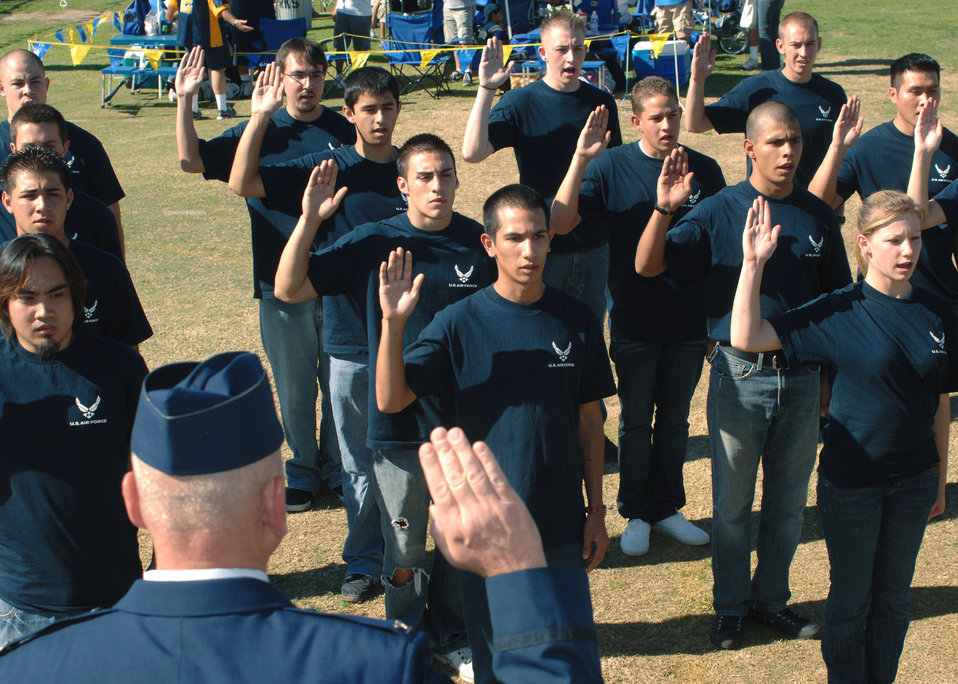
Recruits enlistment in the Rose Bowl

Air Force recruits are sworn in by Col. Jeffery Robertson prior to the start of the UCLA/Oregon State football game Nov. 8 at the Rose Bowl in Los Angeles.